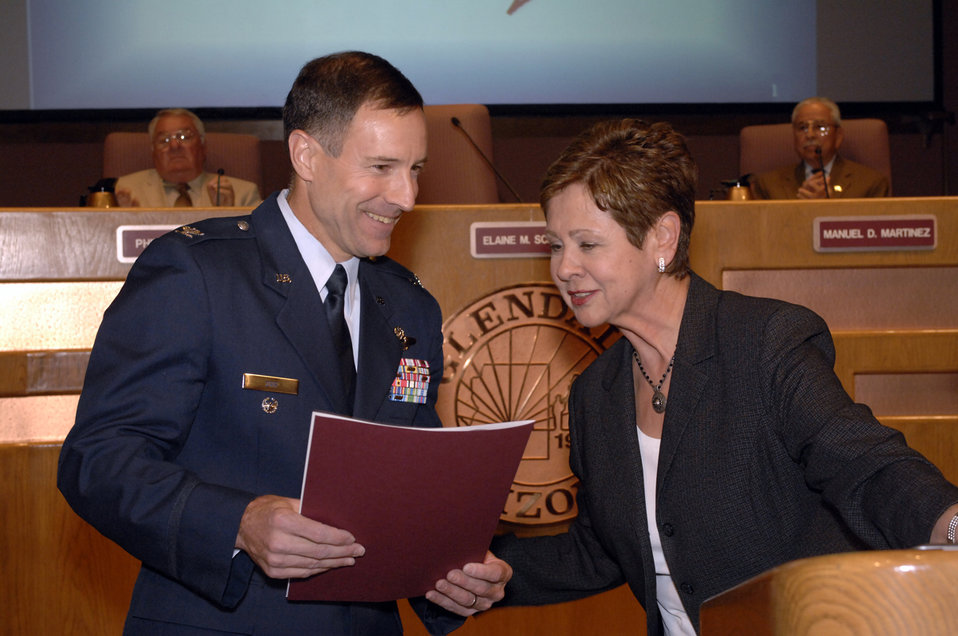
Air Force Week

Elaine Scruggs, Glendale City mayor, presents an Air Force Week proclamation to Col. David Orr, 56th Fighter Wing vice commander at Luke Air Force Base, Ariz., in the Glendale City Council Chambers March 13. March 19 to 25 has been officially proclaimed Air Force Week by the City of Glendale.